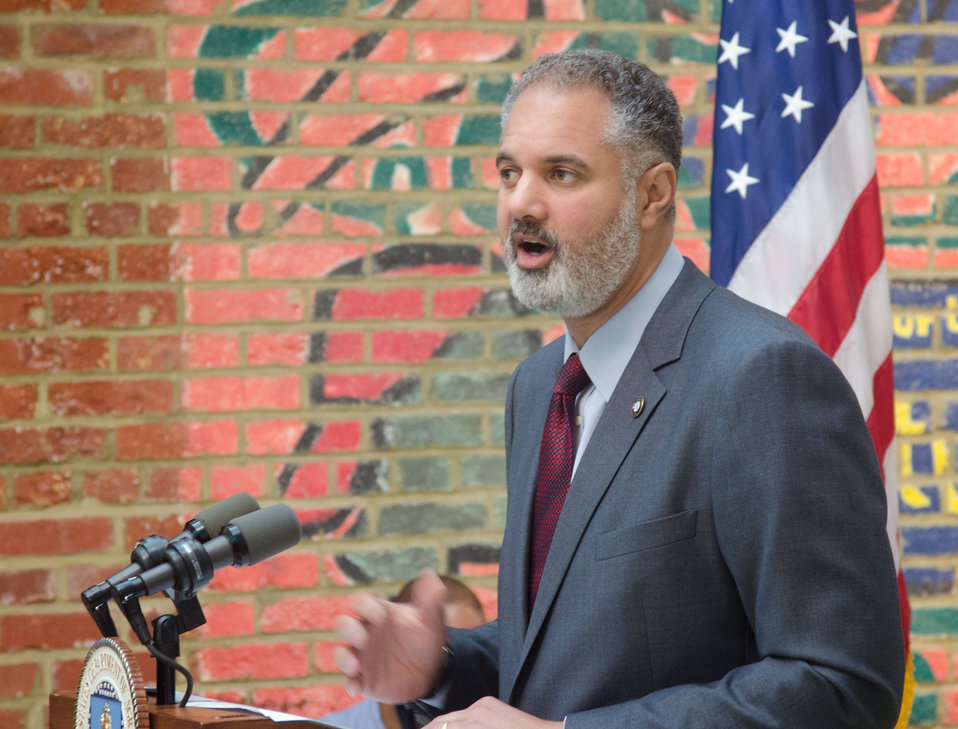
Corporation for National and Community Service CEO Patrick Corvington makes remarks at the Bread for the City on Friday, April 29, 20ll in Washington, DC, to end hunger and innovative partnerships to address hunger, especially among children.